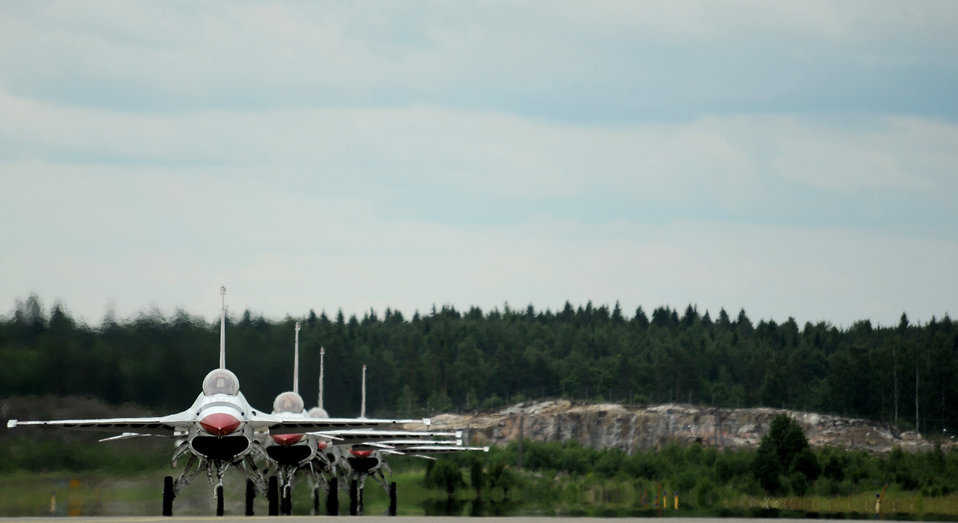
Thunderbirds in Finland

The Thunderbirds taxi June 17, 2011, at Turku Airport, Finland.